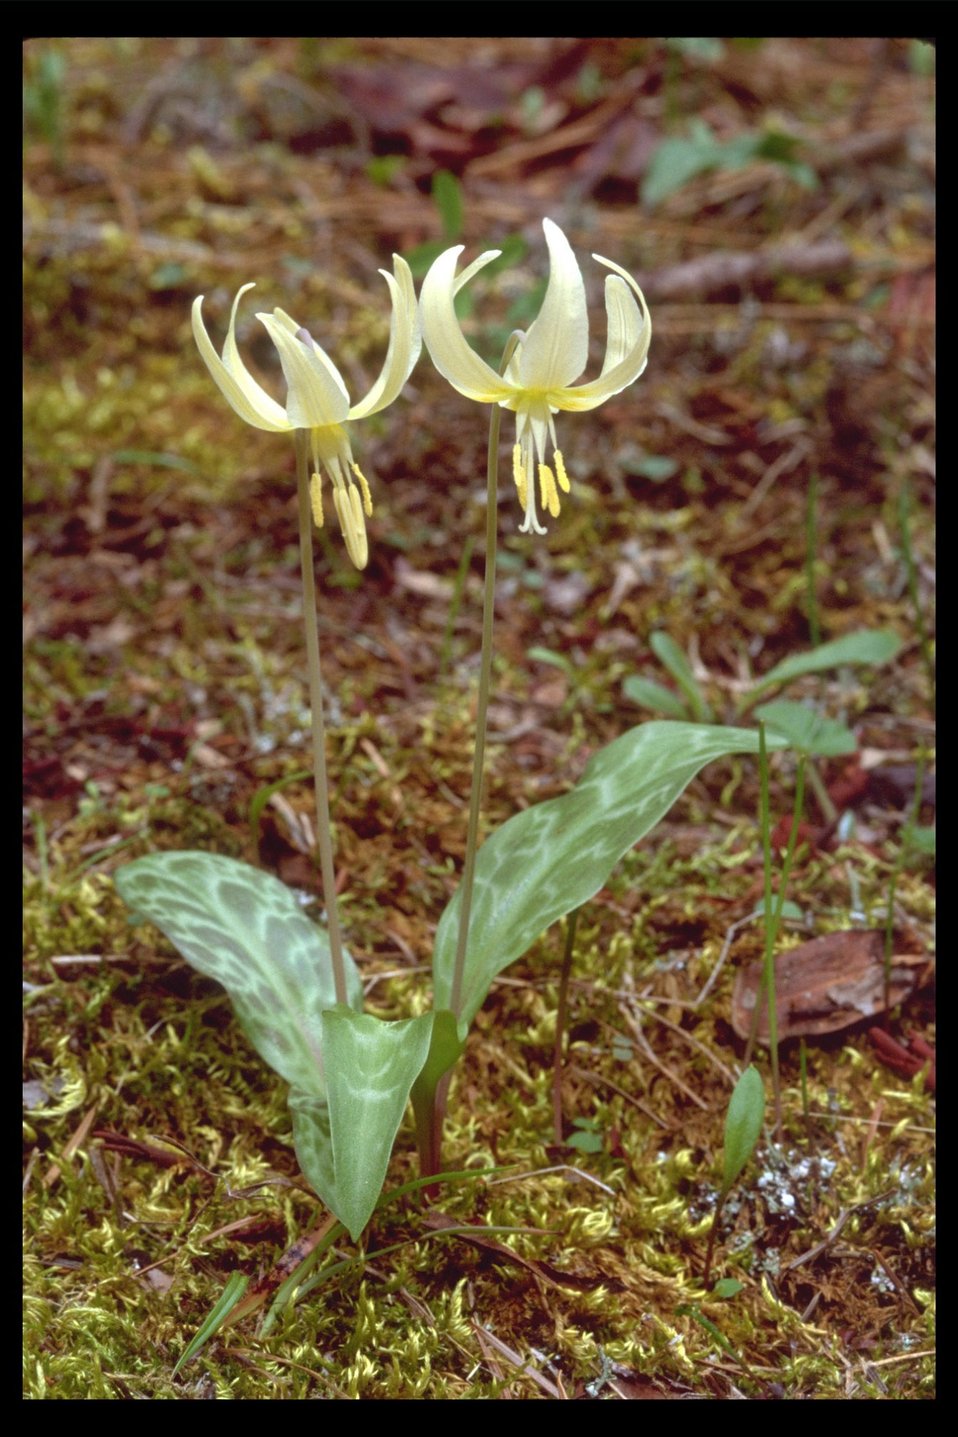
Oregon Fawn Lily (Erythronium oregonum) along East Evan's Creek.